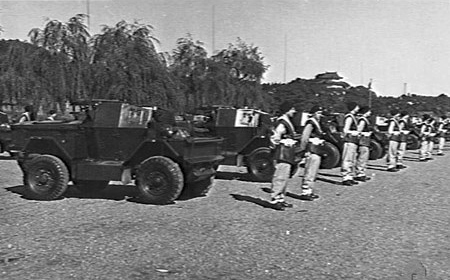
C Squadron, 1st Australian Armoured Car Regiment, stand in front of their vehicles ready for inspection by the BCOF Commander-in-Chief Lieutenant General H. C. H. Robertson, CBE DSO.